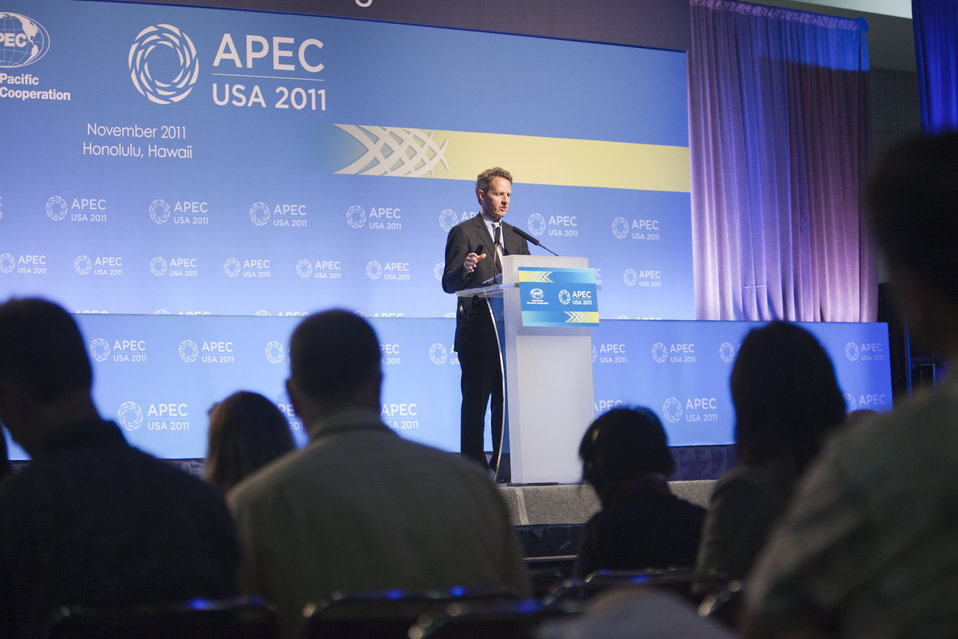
APEC Meeting of Finance Ministers

At the conclusion of the meetings, Treasury Secretary Tim Geithner held a press conference where he said, 'The meetings over the past two days have reinforced the importance of the relationships shared by APEC members. This weekend, President Obama will host the APEC Economic Leaders, and they will work to further strengthen those relationships, and in turn, strengthen growth in the Pacific Rim and around the world.'